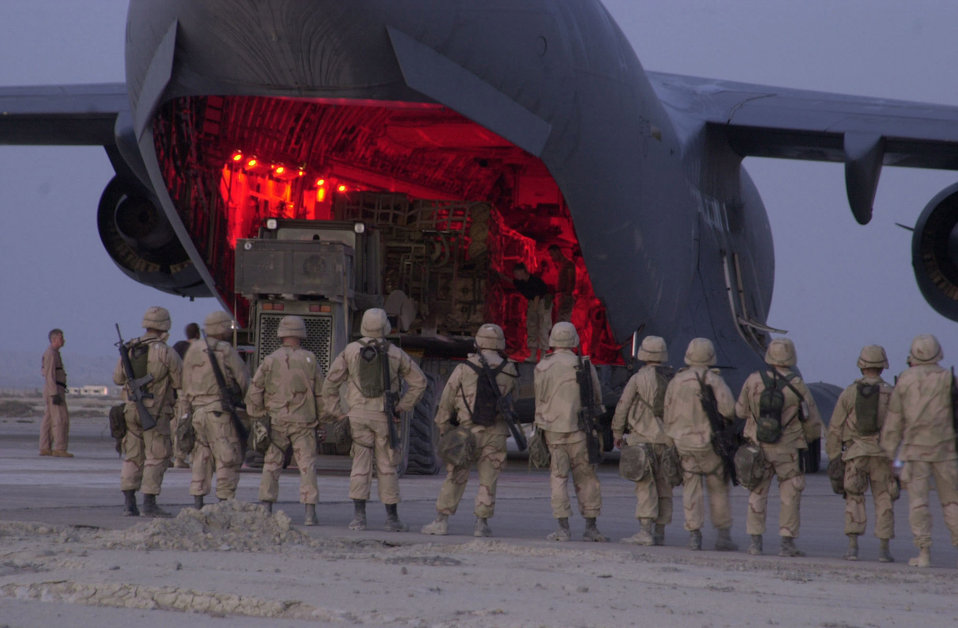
All aboard

OPERATION ENDURING FREEDOM -– Marines from the 26th Marine Expeditionary Unit line up to board a C-17A Globemaster III at an operating location in support of Operation Enduring Freedom. OEF warriors consist of a multi-service military force including air, land and sea power cooperating and working together.